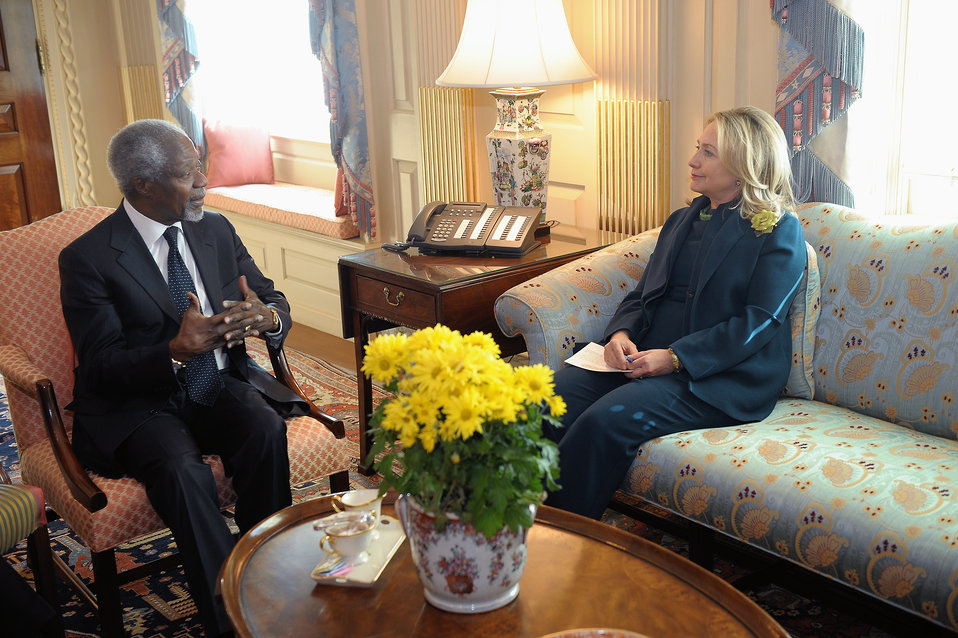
Secretary Clinton Meets Former UN Secretary-General and Current Chairman of Alliance for a Green Revolution in Africa Kofi Annan

U.S. Secretary of State Hillary Rodham Clinton meets with Kofi Annan, former UN Secretary-General and current Chairman of the Alliance for a Green Revolution in Africa, at the U.S. Department of State in Washington, D.C., on November 8, 2011.